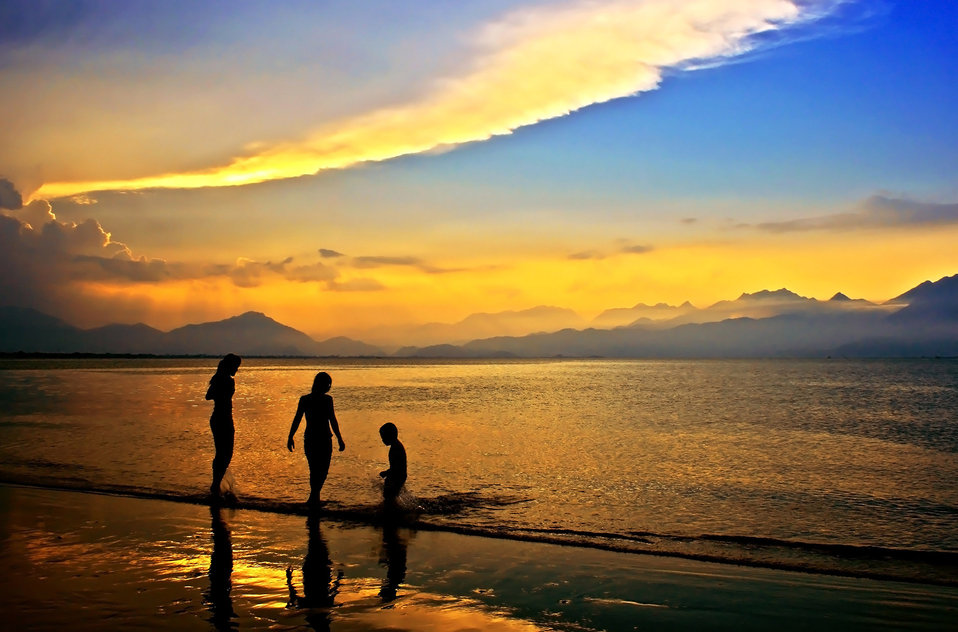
Sunset #13

Sunset on the bay of danang, central vietnam..